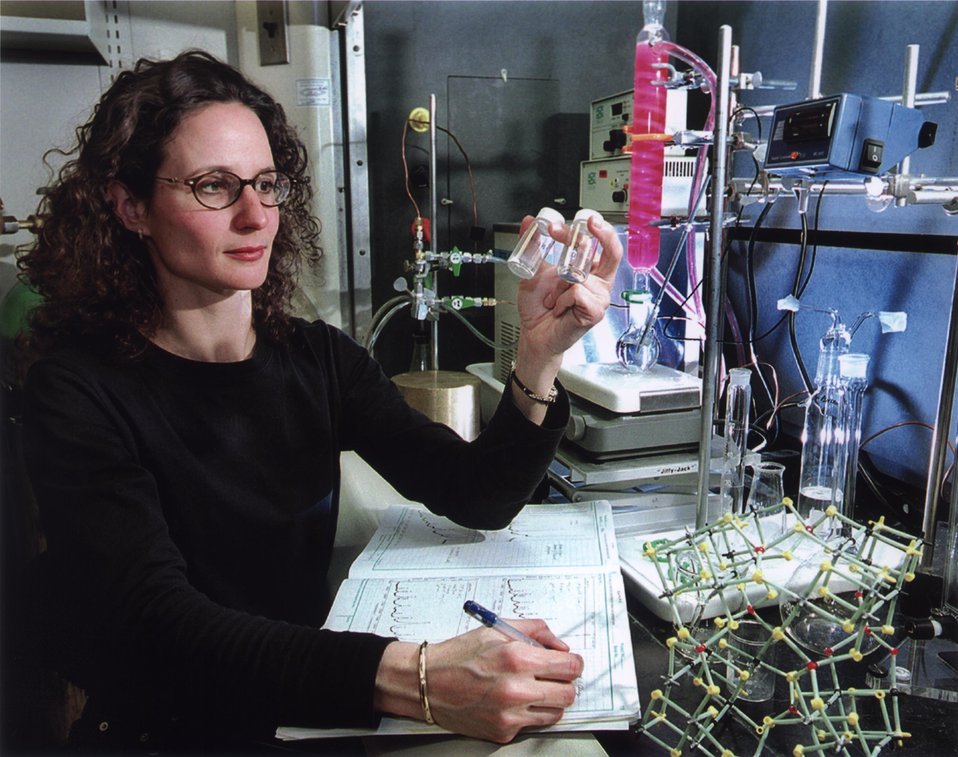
SANDIA INVESTIGATOR EXAMINES VIALS OF RECENTLY CRYSTALLIZED SANDIA OCTAHEDRAL MOLECULAR SIEVES (SOMS).

SANDIA RESEARCHERS HAVE CREATED A NEW CLASS OF MOLECULAR CAGES THAT CAN CAPTURE RADIOACTIVE CHEMICALS SWIMMING IN A SEA OF HAZARDOUS WASTE. THEY CAN LET CERTAIN SPECIES IN WHILE KEEPING OTHERS OUT. THESE MICRO-POROUS MATERIALS, SANDIA OCTAHEDRAL MOLECULAR SIEVES, (SOMS) CAN BE USEFUL IN MICROELECTRONICS FABRICATION, WASTE CLEAN-UP AND INDUSTRIAL PROCESSING.